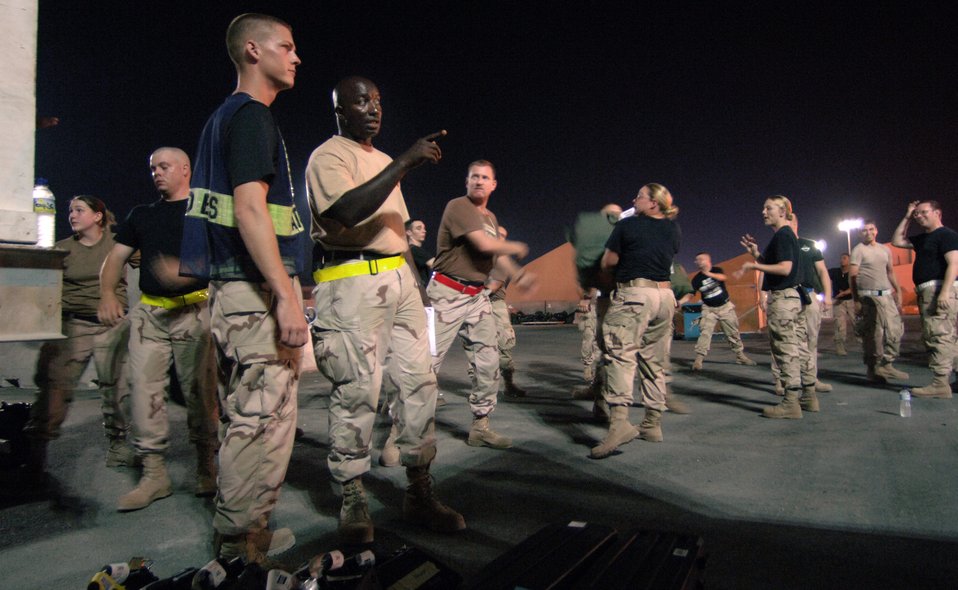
Work begins when boots hit the ground

While newly arrived servicemembers unload luggage from a commercial DC-10 airliner in Southwest Asia Sept. 17, Tech. Sgt. Lonnie Coleman gives on-the-job-training to Tech. Sgt. Ben Davis who will serve as his replacement for the next deployment rotation.